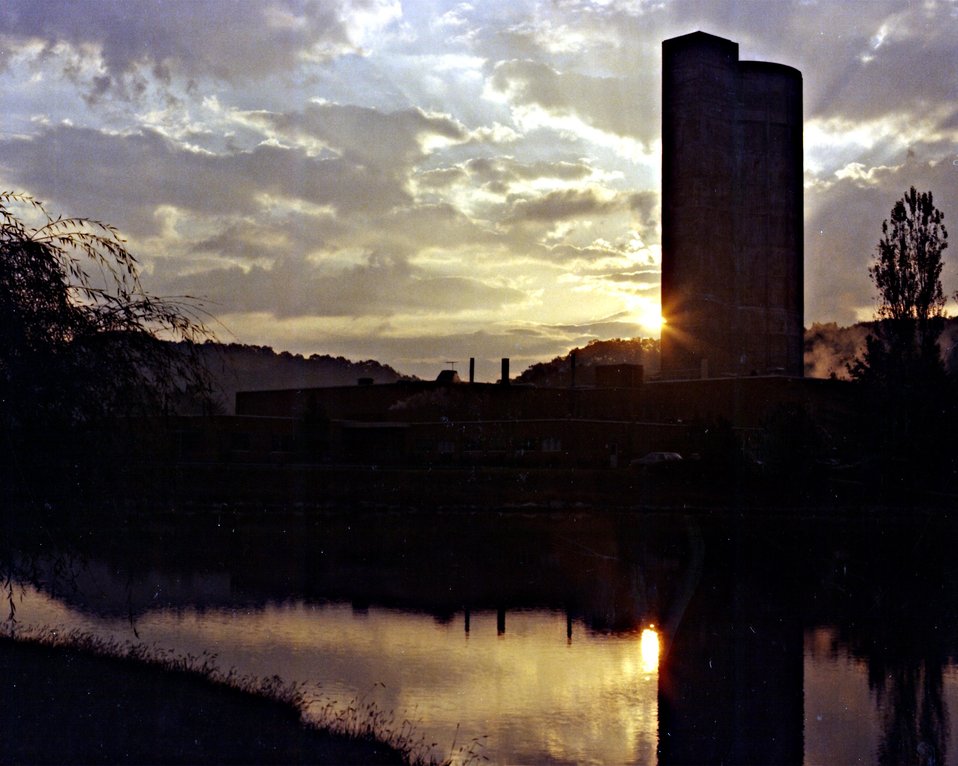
OVERALL VIEW OF THE HOLIFIELD HEAVY ION RESEARCH FACILITY.

THE TOWERING CONCRETE STRUCTURE, THE EQUIVALENT OF A 15- STORY BUILDING, CONTAINS A 25 MILLION VOLT TANDEM ELECTROSTATIC ACCELERATOR, THE WORLD'S LARGEST MACHINE OF ITS TYPE.THE NEW FACILITY MAKES POSSIBLE EXPLORATION OF THE BEHAVIOR OF NUCLEAR MATTER OVER A LARGE PORTION OF THE PERIODIC TABLE AND OF ATOMIC STRUCTURE OVER THE FULL RANGE OF ELEMENTS.